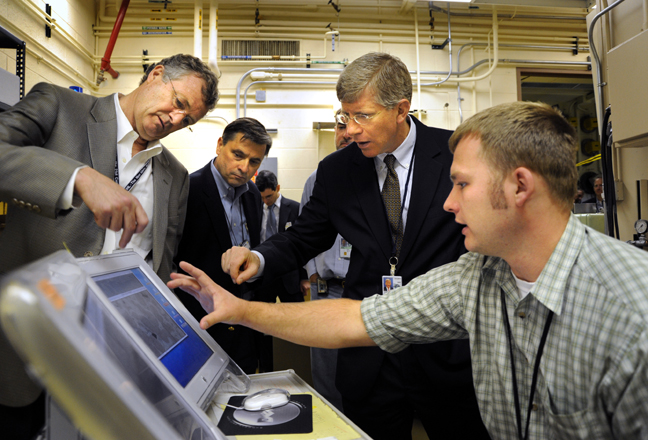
P-6250-05 72dpi

Deputy Secretary Poneman visits the Hot Fuel Examination Facility at the Materials and Fuels Complex. These hot cells are used to examine the performance of nuclear fuel after it has been irradiated in a reactor.